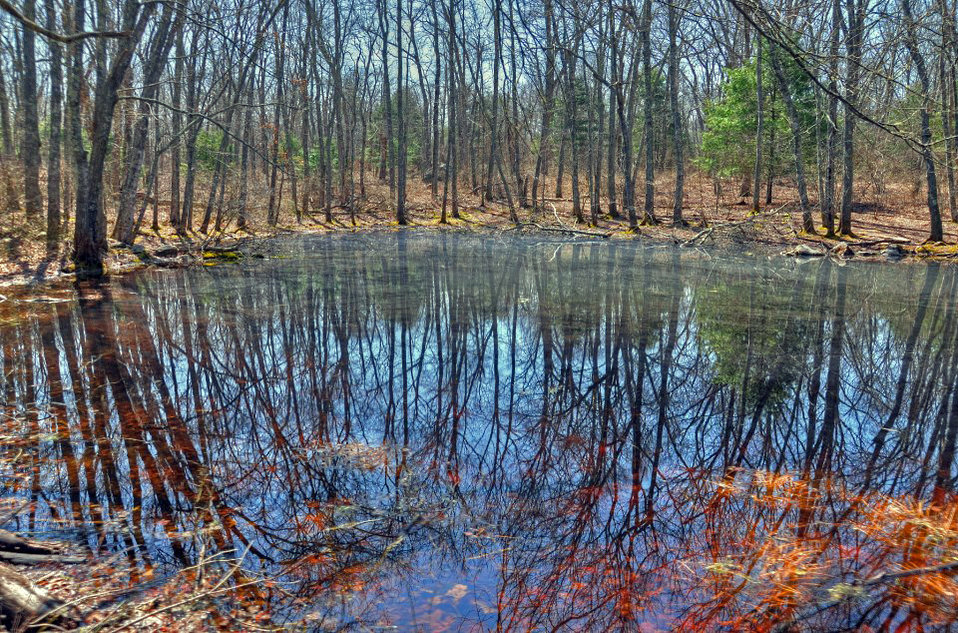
Pond

Ninigret National Wildlife Refuge.